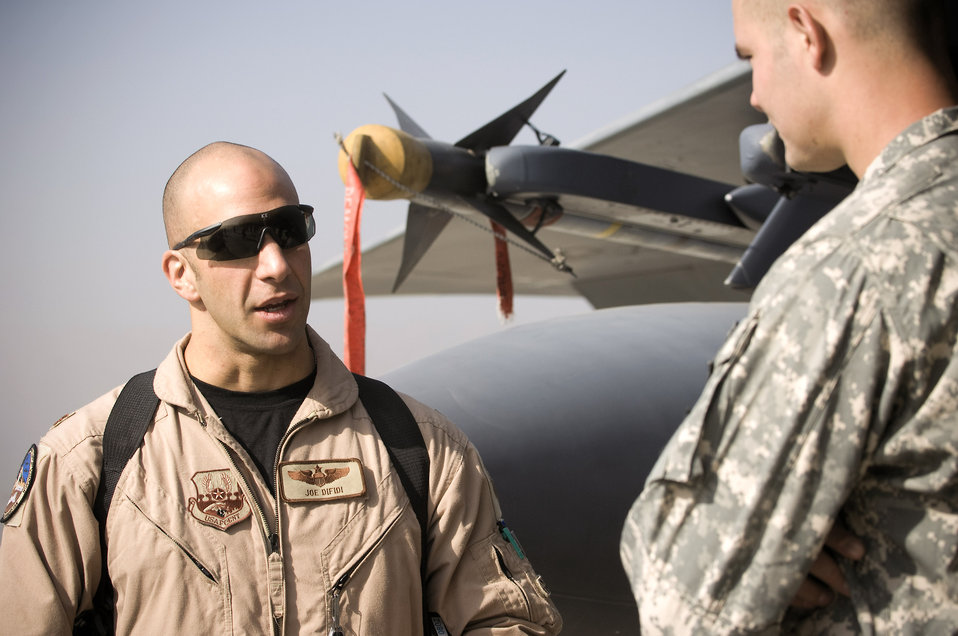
Air support unites Airmen, Soldiers in Afghanistan

Maj. Joe DiFidi talks with a Pennsylvania Army National Guard Soldier during an Oct. 28 visit to Bagram Airfield, Afghanistan. Members from the 391st Expeditionary Fighter Squadron and the 75th Expeditionary Fighter Squadron hosted the Soldiers who wanted to thank the pilots who protect ground forces with close-air support while engaged in firefights with enemy forces.